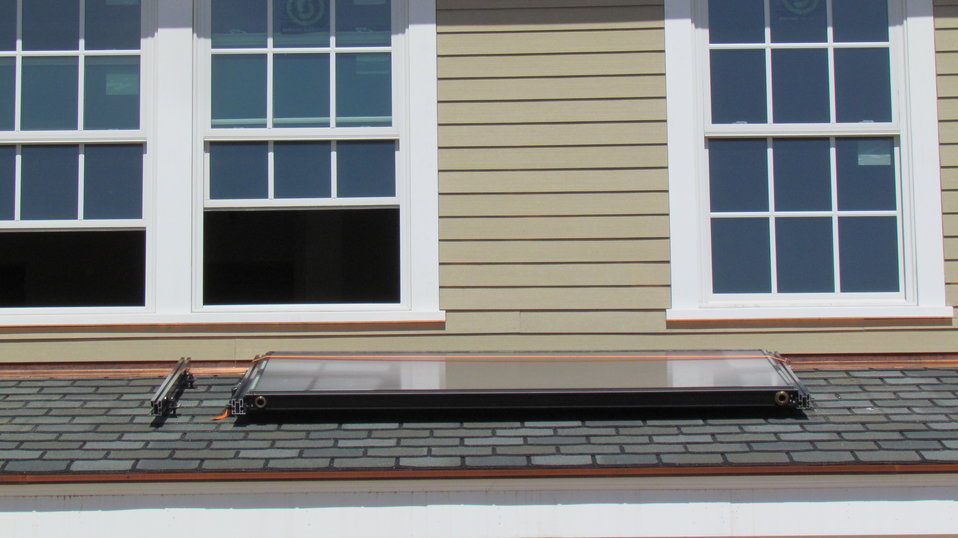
Installation of solar thermal collectors taking place. Four solar collectors will be installed on front porch of the NZERTF.